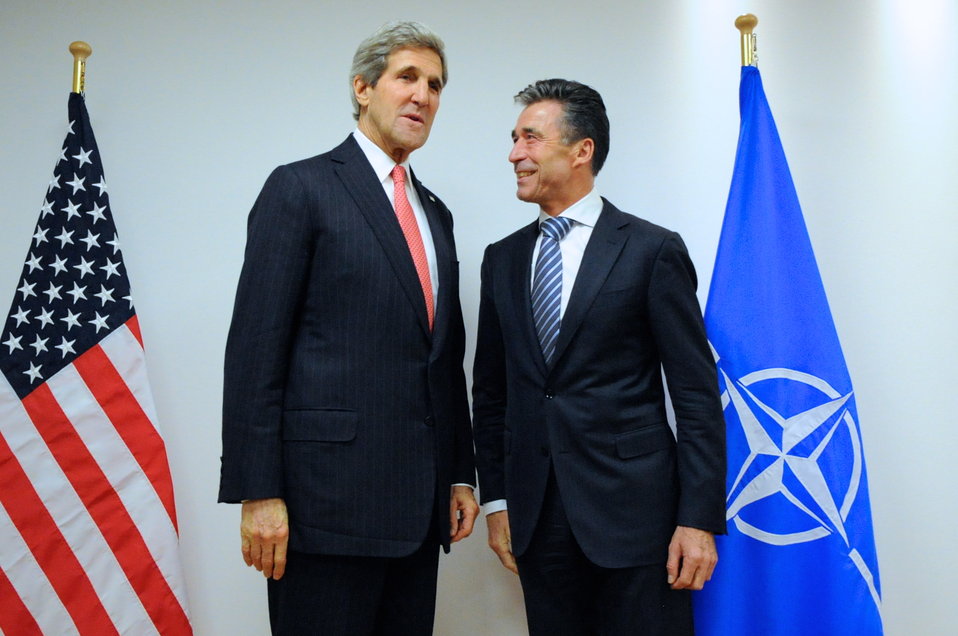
Secretary Kerry Meets with Secretary General Rasmussen

U.S. Secretary of State John Kerry chats with NATO Secretary General Anders Fogh Rasmussen before the start of a bilateral discussion preceding a NATO Ministerial meeting in Brussels, Belgium, on December 3, 2013.